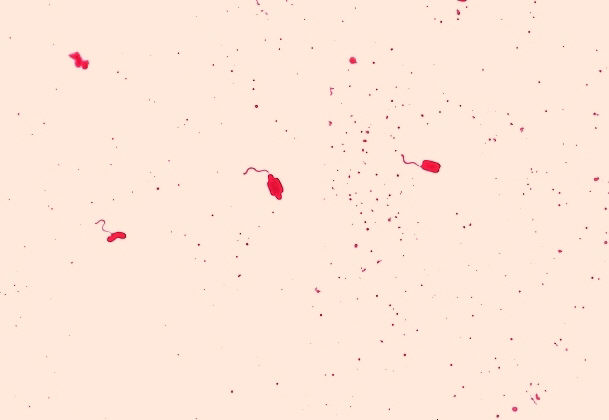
Pseudomonas mendocina. Leifson flagella stain (digitally colorized).